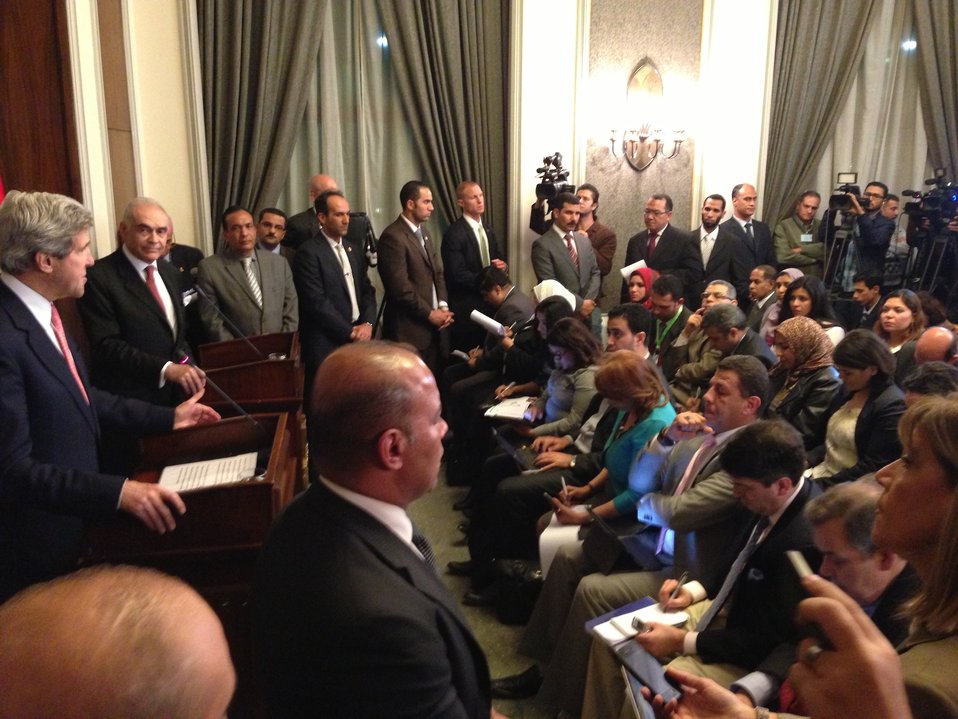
Secretary Kerry Delivers Remarks With Egyptian Foreign Minister Amr

U.S. Secretary of State John Kerry delivers remarks with Egyptian Foreign Minister Mohamed Kamel Amr in Cairo, Egypt, on March 2, 2013.